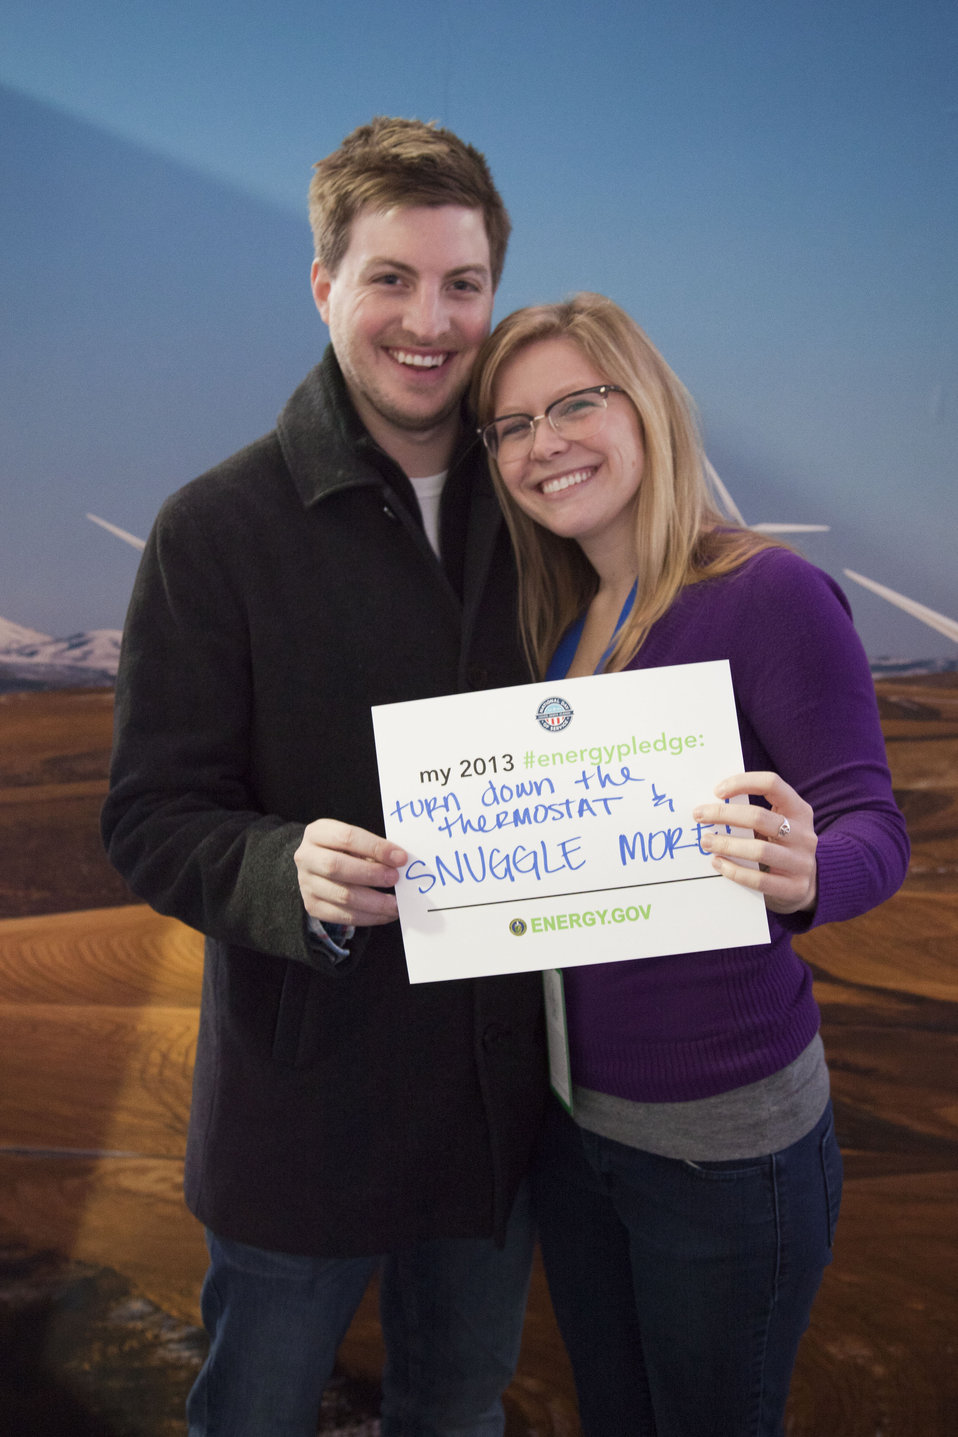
What's your #energypledge?